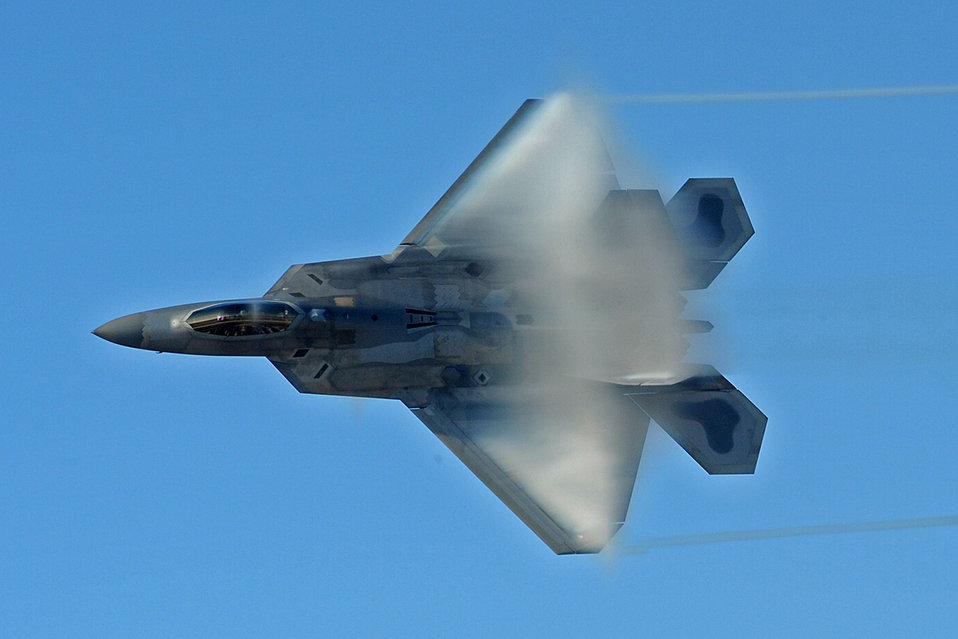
Going supersonic

An F-22 Raptor piloted by Maj. David Skalicky flies over Langley Air Force Base, Va., Feb. 3, 2010. Major Skalicky is with the F-22 Raptor Demonstration Team.